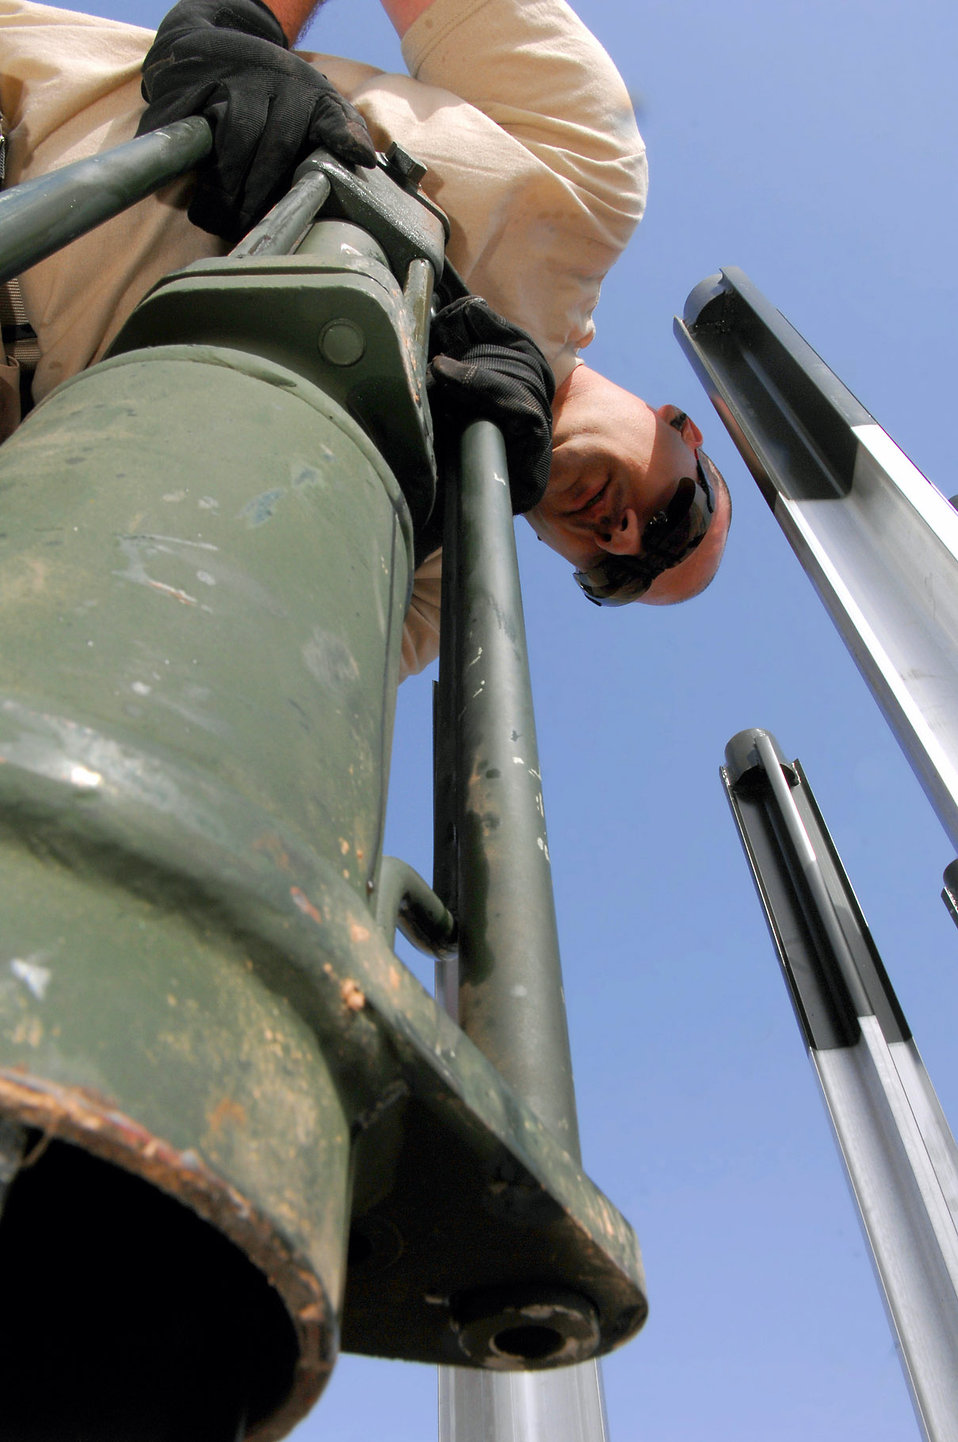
Arresting development

Tech. Sgt. Randy Thibeau holds a stake hammer as it pounds four-foot stake into the ground March 12 at Balad Air Base, Iraq. The stake prevents the arresting barrier system from shifting during an emergency landing. The barrier system gives the Air Force the ability to launch aircraft and recover them anywhere in the world. If a fighter aircraft experiences malfunctioning landing gear, the pilot can a drop a hook to catch a cable attached to the barrier system, which slows the aircraft and enables a smoother landing. Sergeant Thibeau is a 332nd Expeditionary Civil Engineer Squadron power production technician deployed from Ellsworth Air Force Base, S.D.